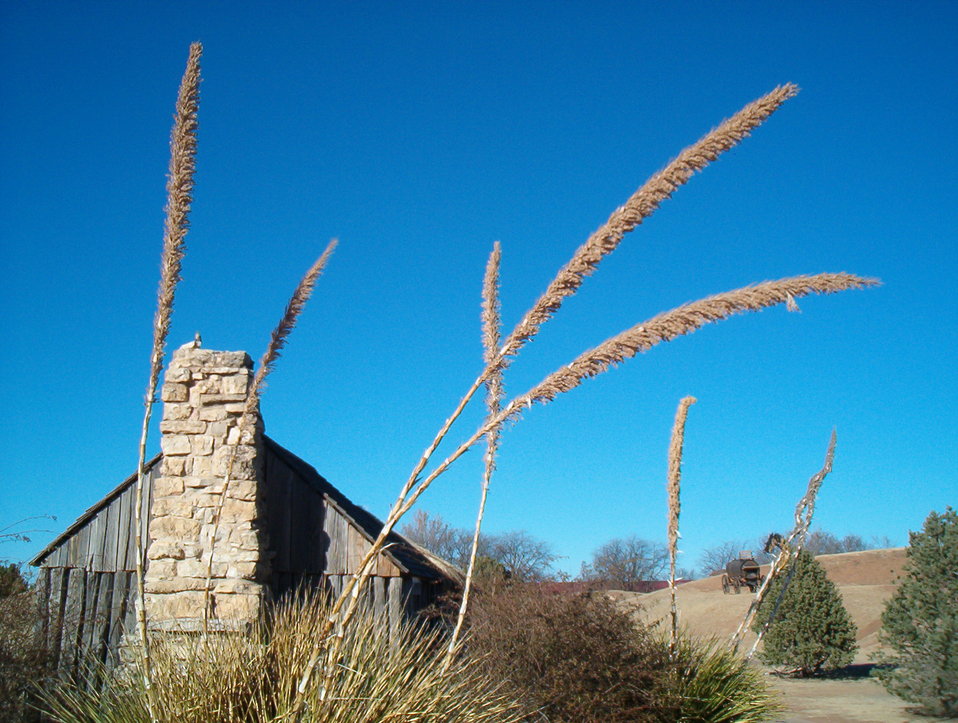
1800s Ranch house — at the National Ranching Heritage Center. At Texas Tech University in Lubbock, Texas. Self made.